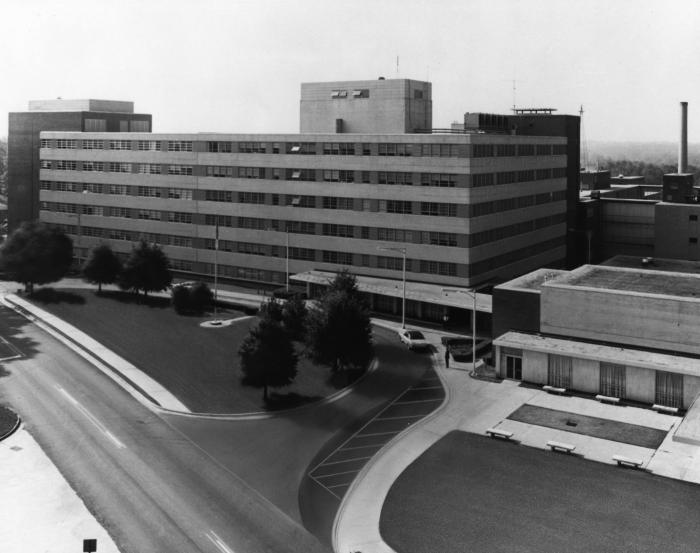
This aerial photograph taken during the 1980s, revealed the front entrance to Building 1 on the Centers for Disease Control's Roybal Campus, located on Clifton Road, in Atlanta, Georgia.